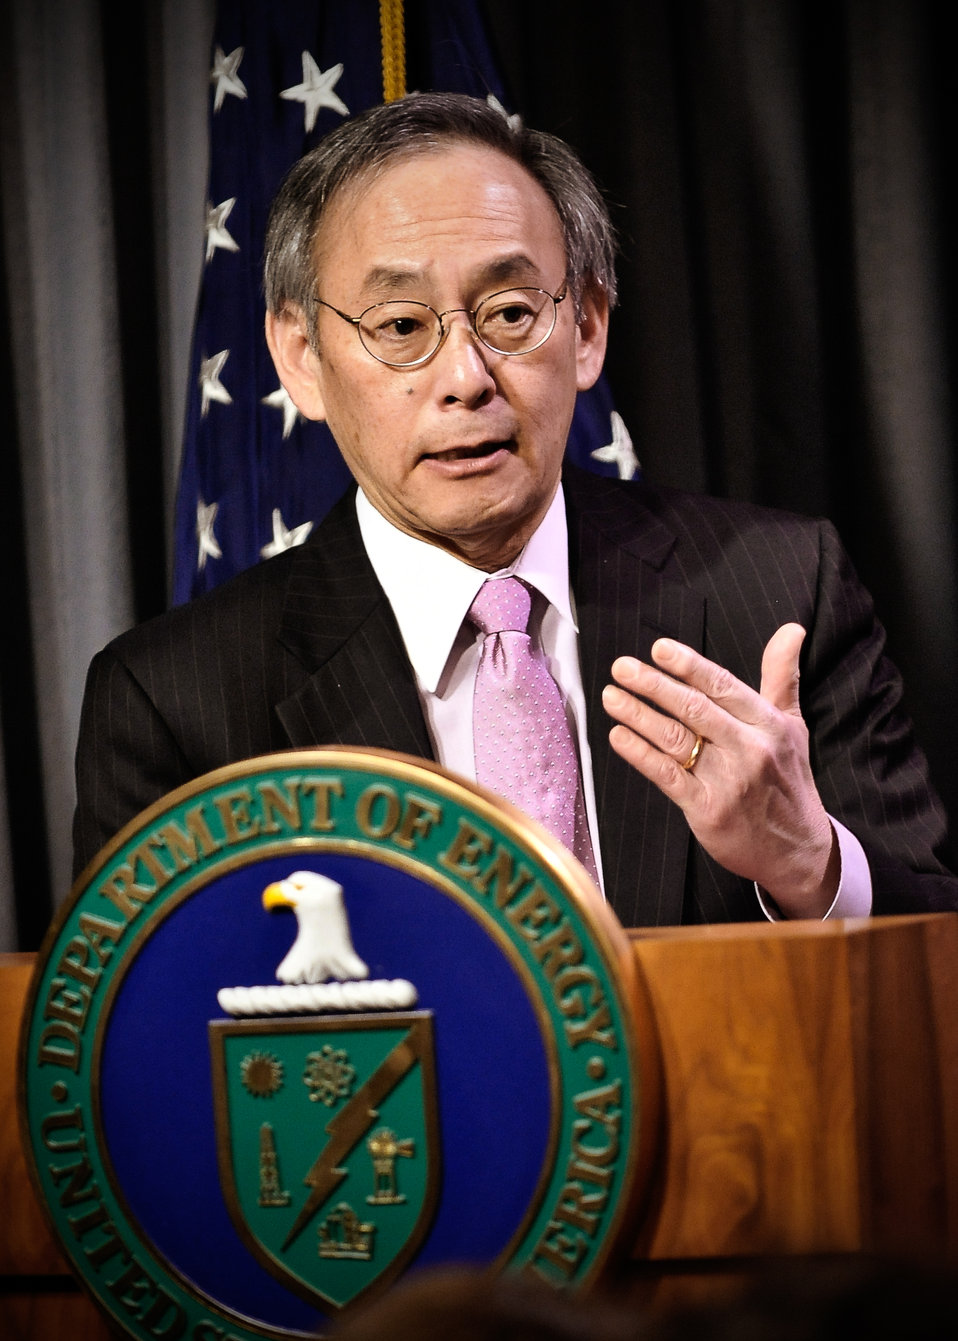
Energy Matters Online Townhall 1 of 5

Secretary Steven Chu hosts an online town hall to discuss President Obama's clean energy and innovation agenda.